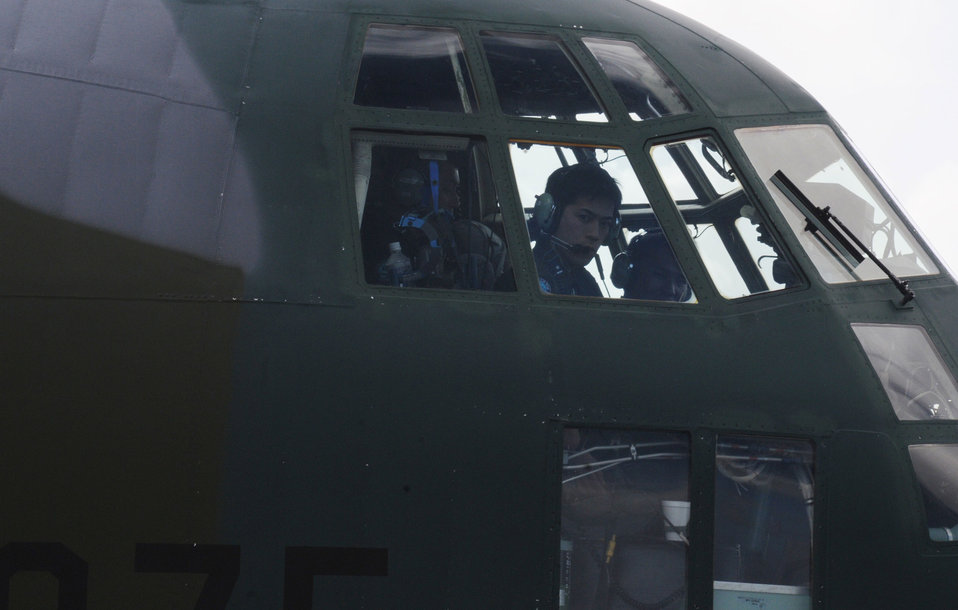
Japan forces arrive in Guam for joint exercise

A Japan Air Self Defense Force C-130 pilot taxies on the flightline Jan. 27 at Andersen Air Force Base, Guam. More than 60 JASDF members arrived in three C-130s to participate in Exercise Cope North 09-1, a regularly scheduled exercise scheduled for Feb. 2 through 13. Cope North is designed to enhance U.S. and Japanese air operations in defense of Japan. This will be the 10th time the United States and Japan forces have held a Cope North exercise on Guam, and it will be the fourth time that the JASDF will use live ordinance.